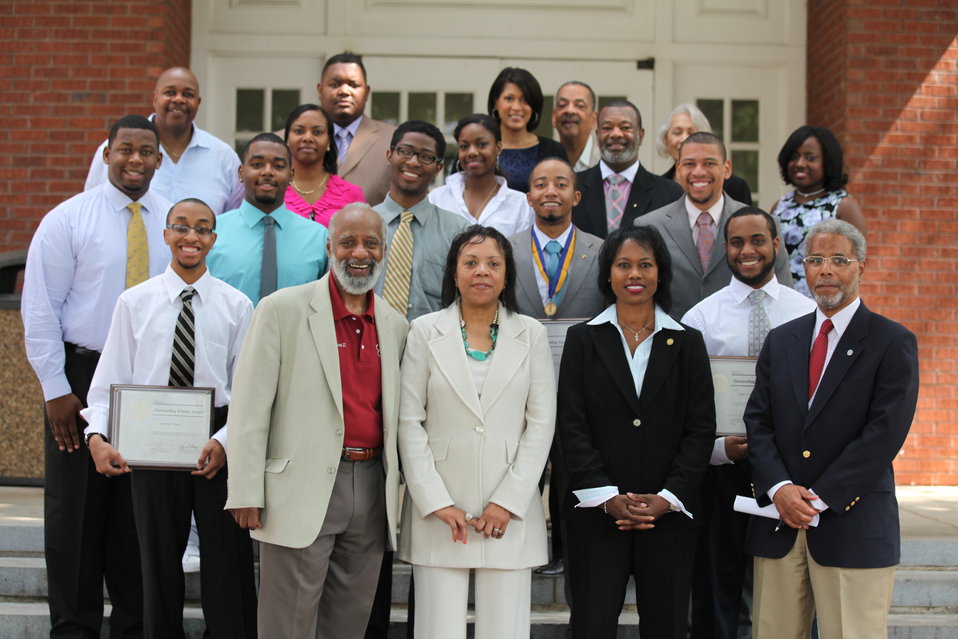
Morehouse and Spelman awards May 2012

In June, Dot Harris and Annie Whatley traveled to Morehouse and Spelman to give out STEM awards to selected students.